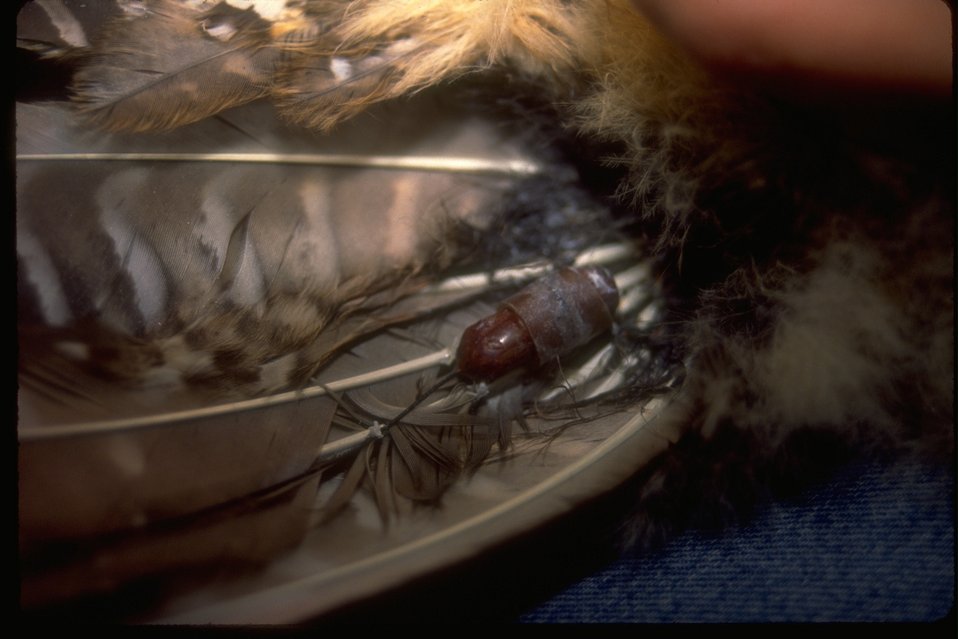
A radio transmitter placed on an owl.